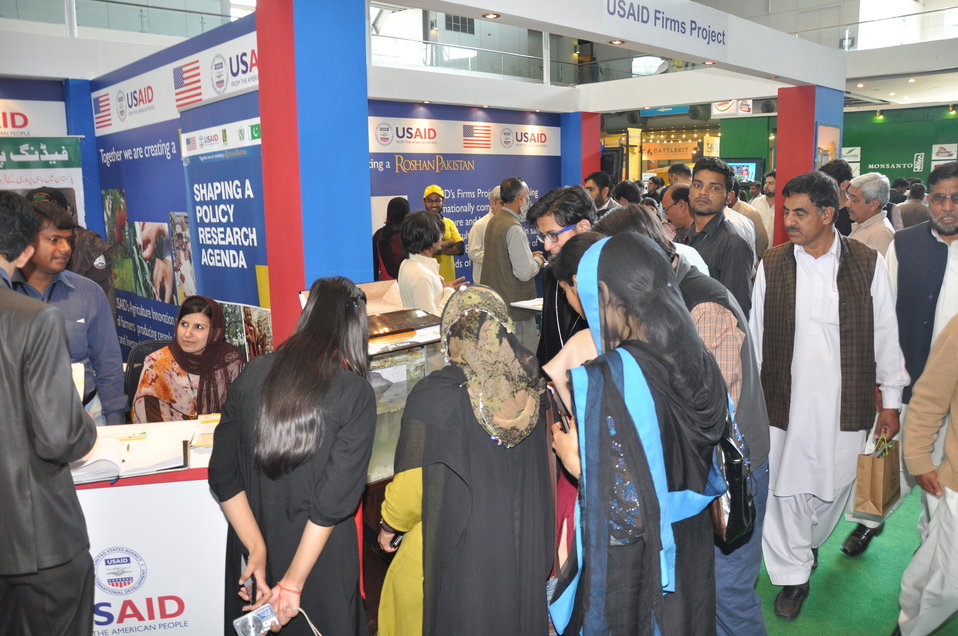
FEEDing Pakistan

a lot of visitors attracted to live Tilapia demonstration of soy-based floating feed.